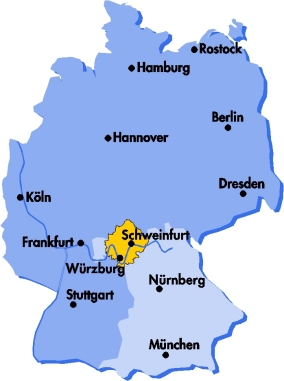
Deutsch: Lage Mainfrankens